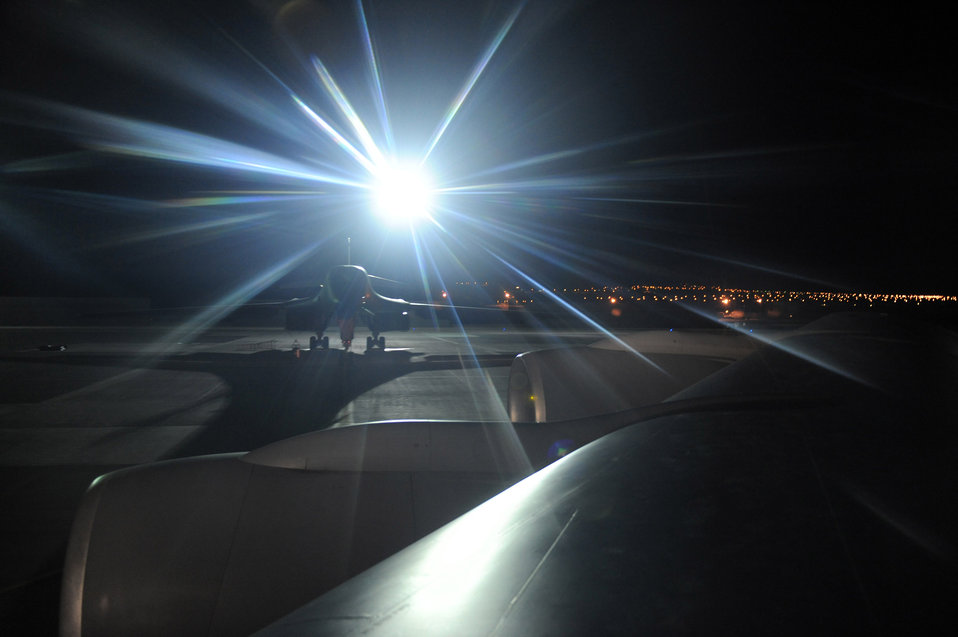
Night operations at Red Flag

A B-1B Lancer can be seen over the wing of a KC-135 Stratotanker Feb. 3 prior to a night refueling mission during a Red Flag exercise at Nellis Air Force Base, Nev. Red Flag is a multi-national exercise providing a realistic environment to practice combat scenarios. The experience gained during the exercise is vital to the survival of air crews in combat.